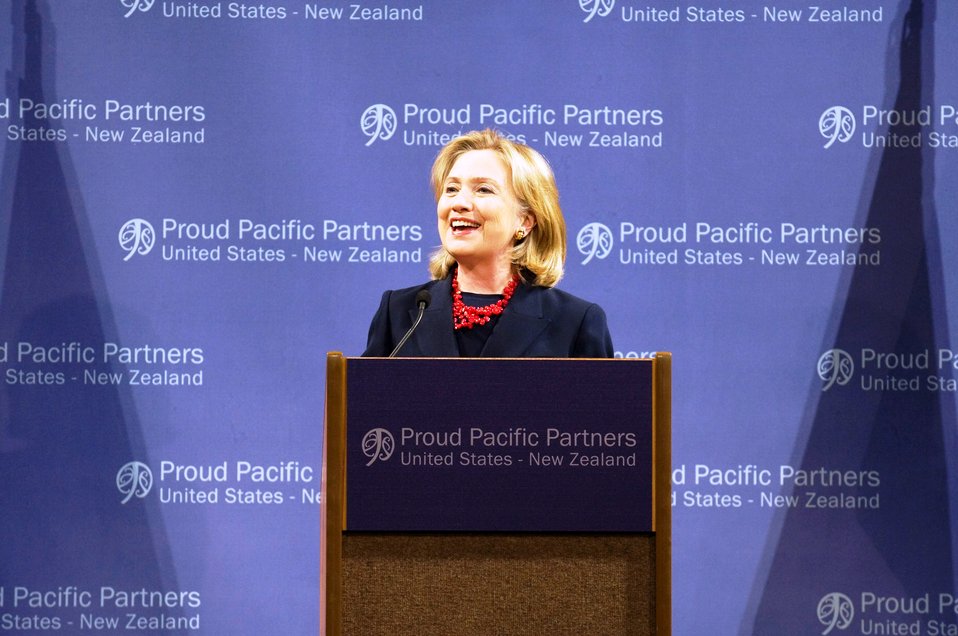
Secretary Clinton Delivers Remarks at a Town Hall Discussion

U.S. Secretary of State Hillary Rodham Clinton delivers remarks at a town hall discussion with approximately 500 citizens at Christchurch’s Town Hall and Convention Centre in Christchurch, New Zealand, on November 5, 2010.